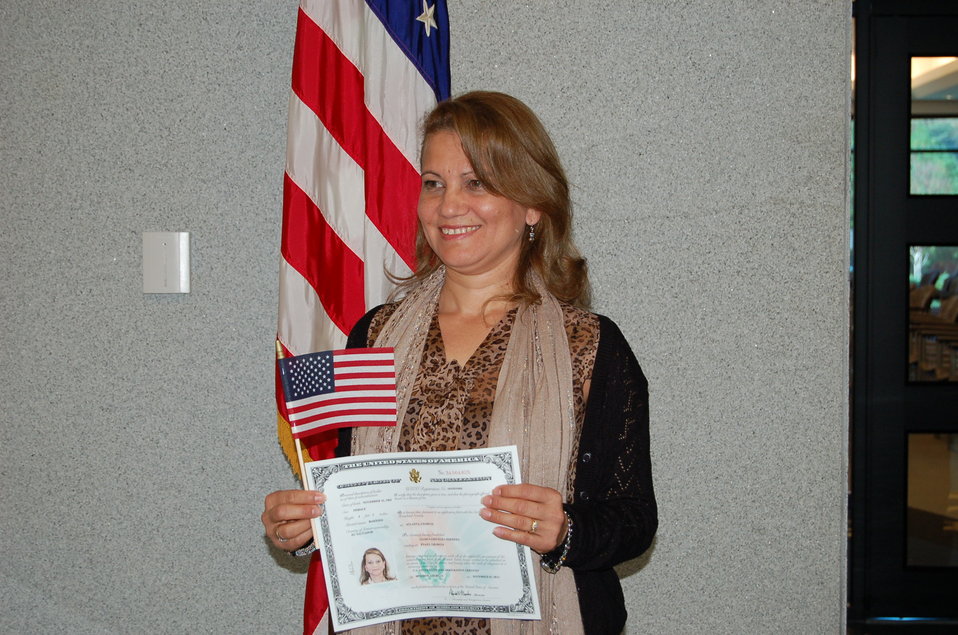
New Citizens